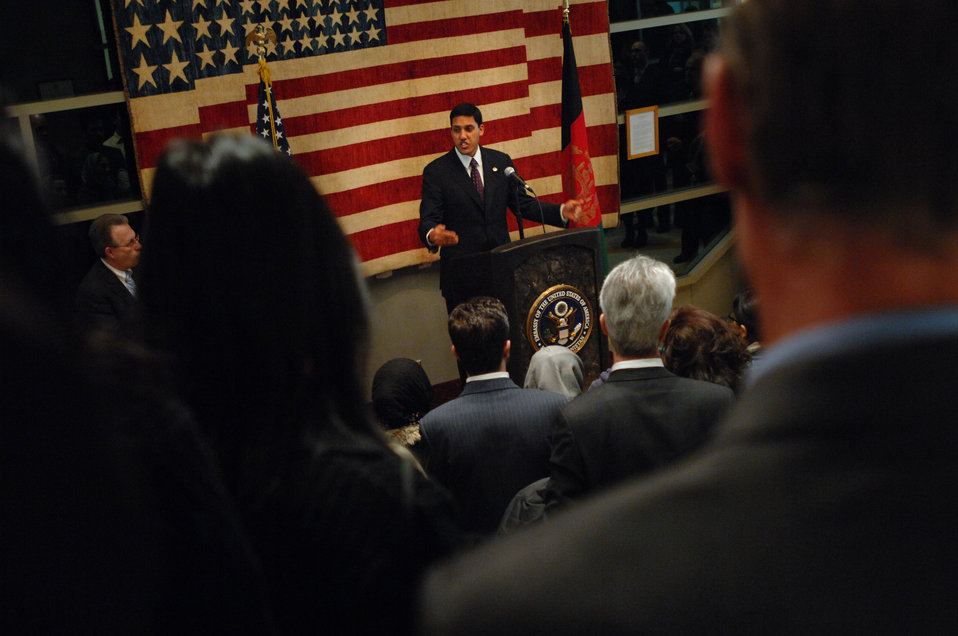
110208sv Shah058

Dr. Rajiv Shah, Administrator of the United States Agency for International Development (USAID), holds a town hall meeting at the U.S. Embassy in Kabul, Afghanistan on Tuesday, February 8, 2011. (S.K. Vemmer/Department of State)